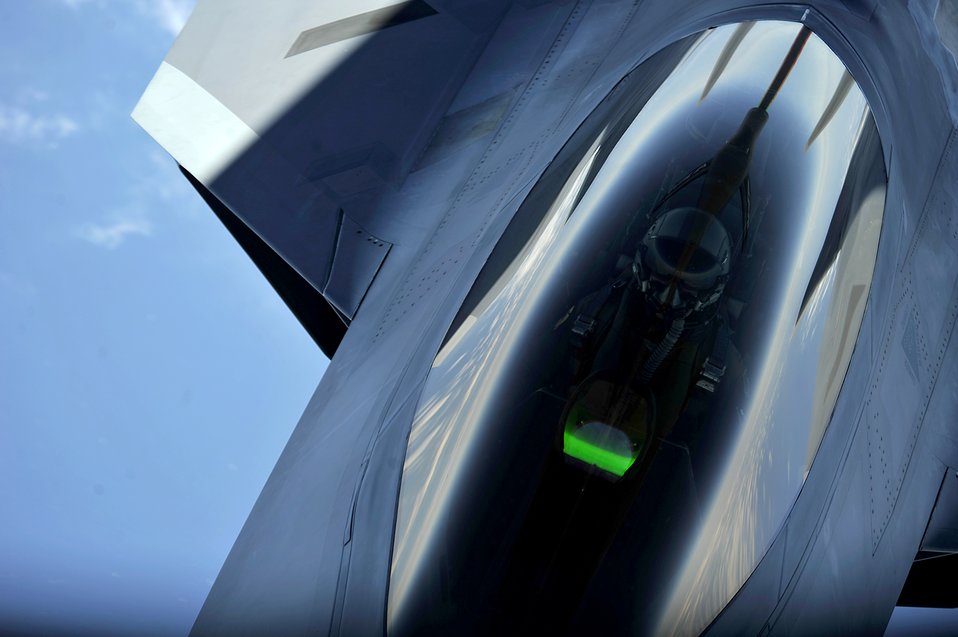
F-22 Raptor

A KC-135 Stratotanker with the 756th Air Refueling Squadron, Joint Base Andrews Naval Air Facility, Md. refuels a 1st Fighter Wing's F-22 Raptor from Joint Base Langley-Eustis, Va. off the east coast on May 10, 2012. The first Raptor assigned to the Wing arrived Jan. 7, 2005. This aircraft was allocated as a trainer, and was docked in a hanger for maintenance personnel to familiarize themselves with its complex systems. The second Raptor, designated for flying operations, arrived Jan. 18, 2005. On Dec. 15, 2005, Air Combat Command commander, along with the 1 FW commander, announced the 27th Fighter Squadron as fully operational capable to fly, fight and win with the F-22. (U.S. Air Force Photo by: Master Sgt. Jeremy Lock)